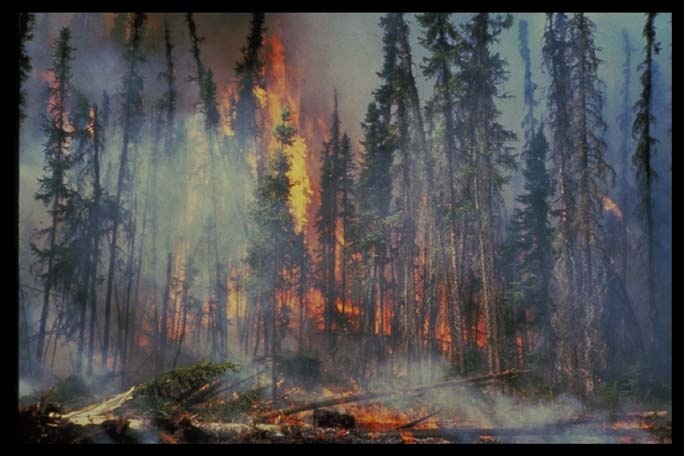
Wildland fire